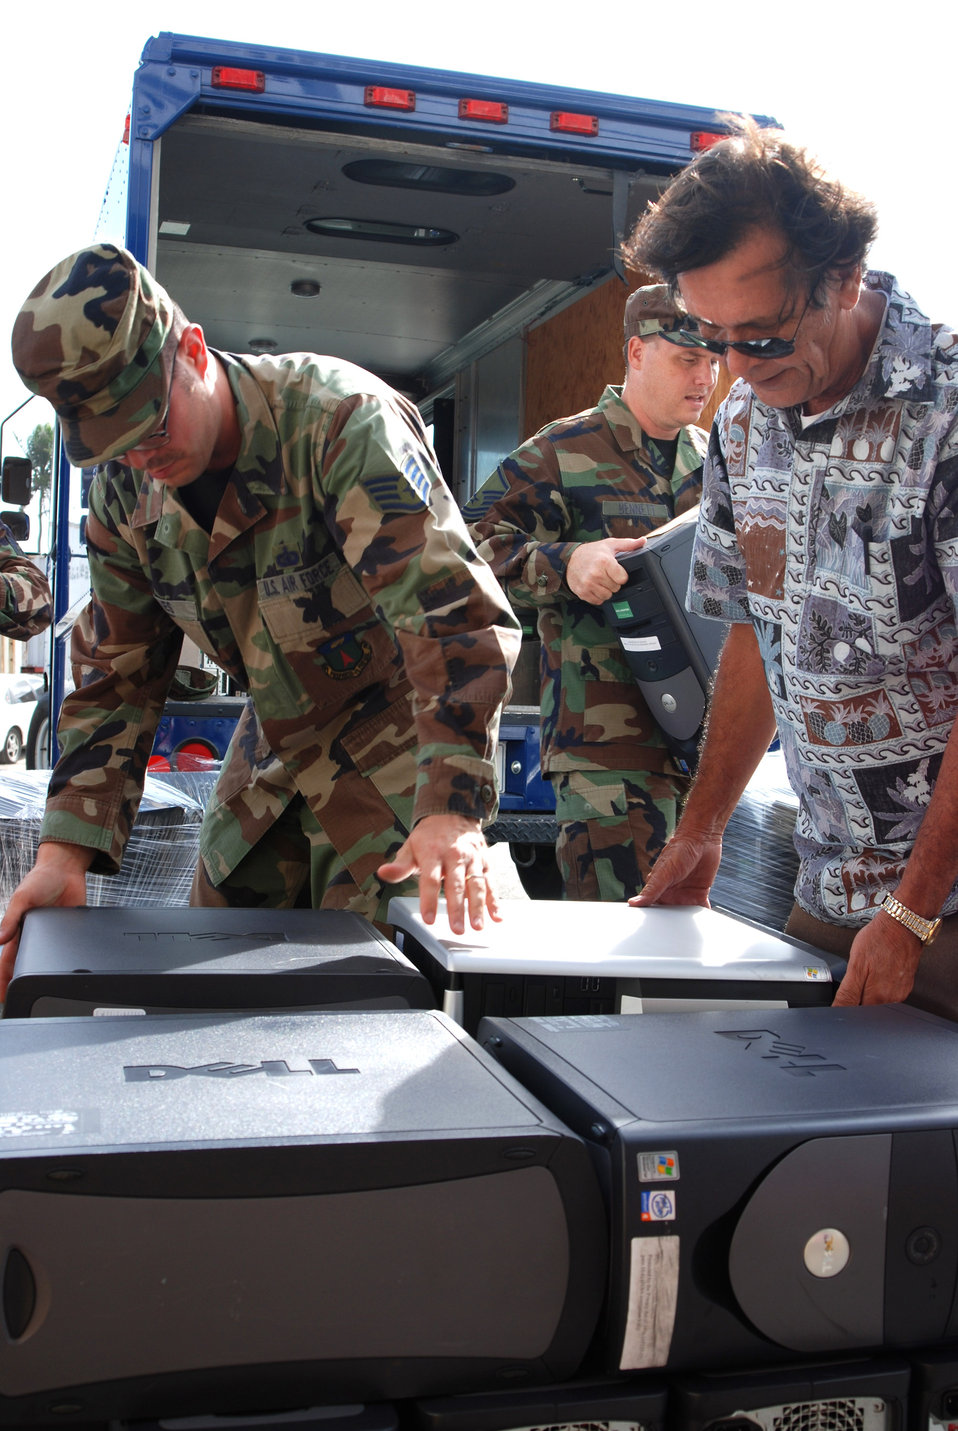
Computer donation

Senior Airman Jerry Peterson and Master Sgt. Brian Bennett palletize computers March 2 with David Pangilinan, of the governor of the Commonwealth of the Northern Mariana Islands liaison office. The 36th Communications Squadron at Andersen Air Force Base, Guam, donated 112 computers to the CNMI Public School System. David Borja, the superintendent of the CNMI Public School System, said the computers will be shipped to schools in Saipan, where the economic need is greatest. Ambros Inc. donated their shipment services for the computers free to Saipain, which will arrive March 9. Airman Peterson and Sergeant Bennett are assigned to the 36th CS.